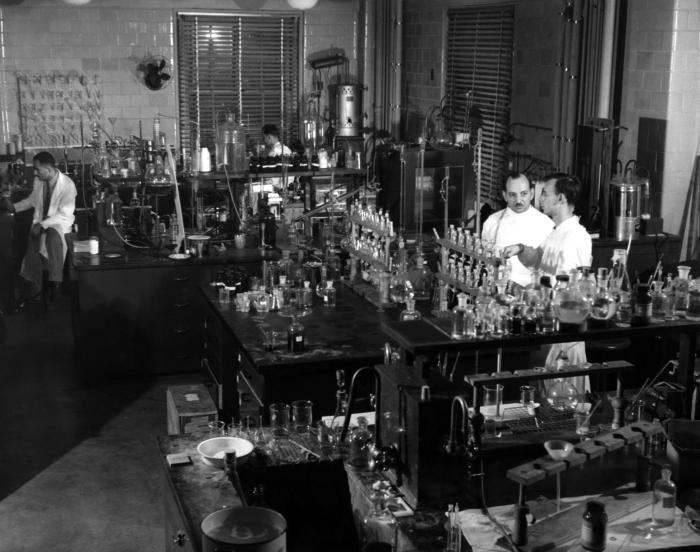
This November, 1943 photograph was provided by the Center for Disease Control's (CDC), National Institute for Occupational Safety and Health (NIOSH). Inside Dr. Goldman's laboratory, which was a part of the National Institutes of Health (NIH), Industrial Hygiene Division, this image depicted a chemist who was in the process of analyzing various samples at his lab bench. Standing with his associate, Dr. Goldman could be seen as the moustachioed man in the foreground. Though the doctor and his lab personnel were wearing lab smocks, they weren't wearing protective filtered breathing masks, goggles, or gloves, which would have protected them from airborne or spilt contaminants.